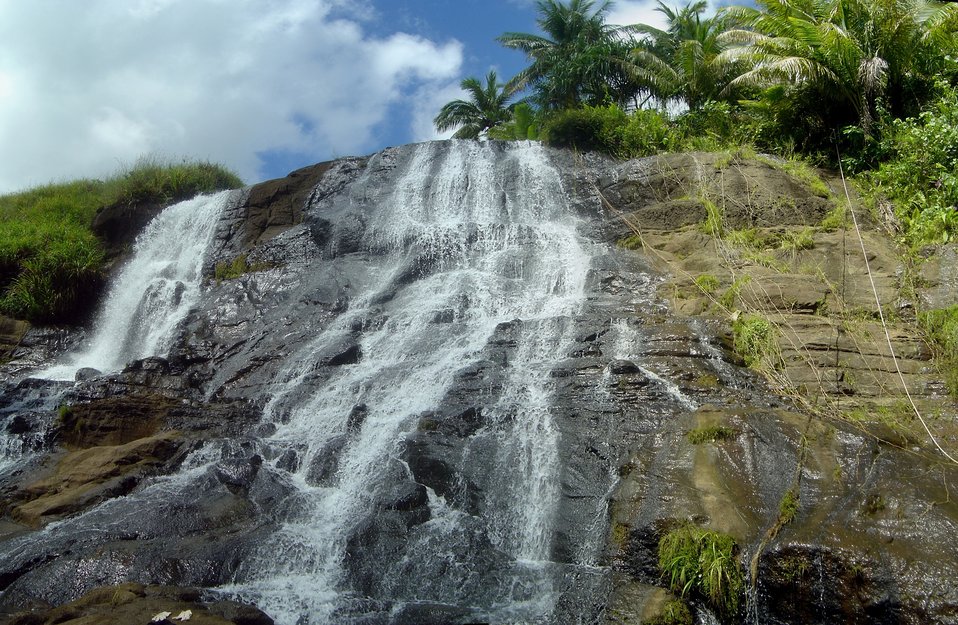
Inajaran Falls in the interior of Guam.